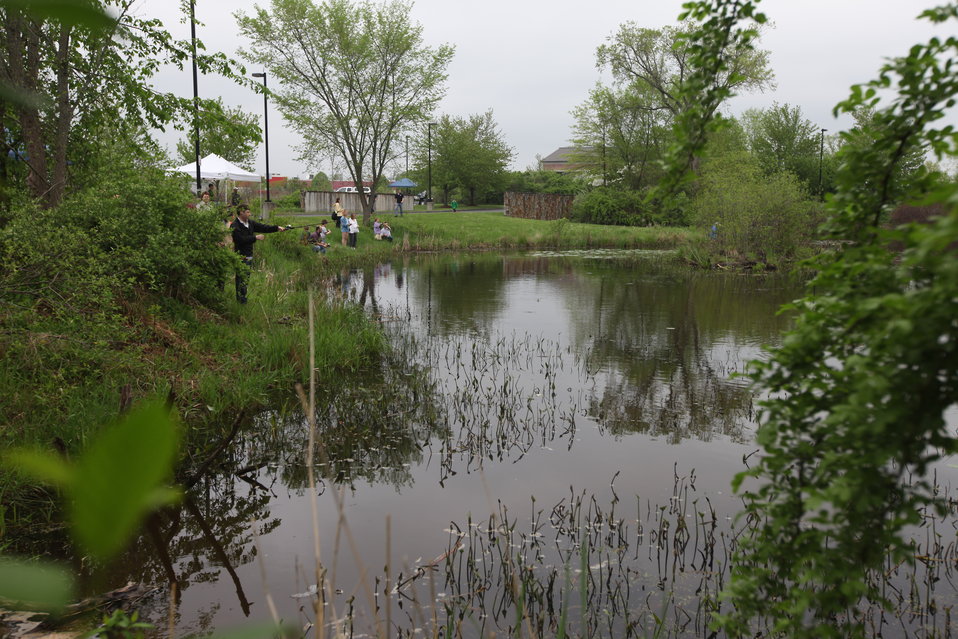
Fishing Derby